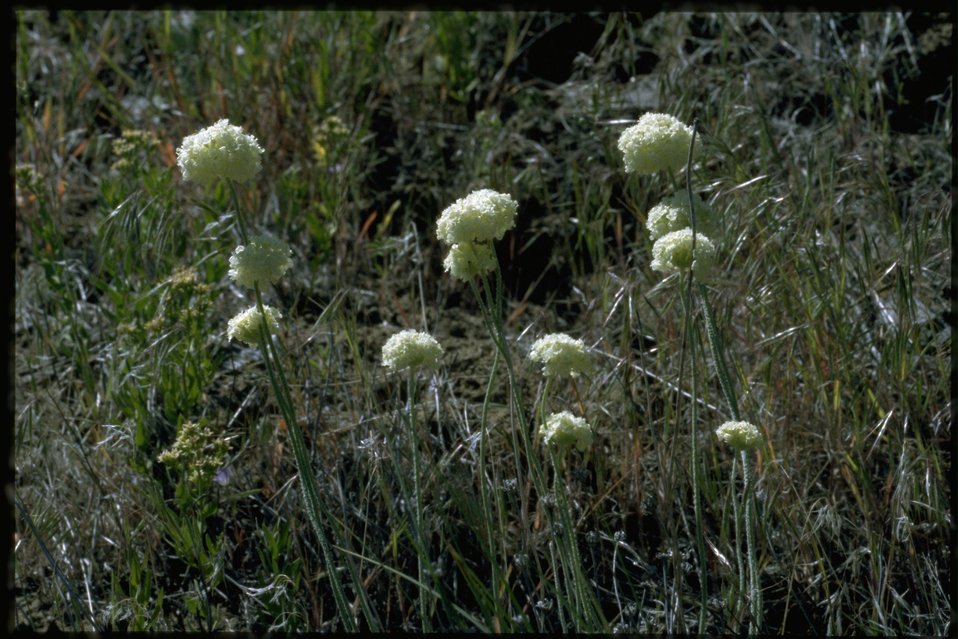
Farshot of Erigonum.